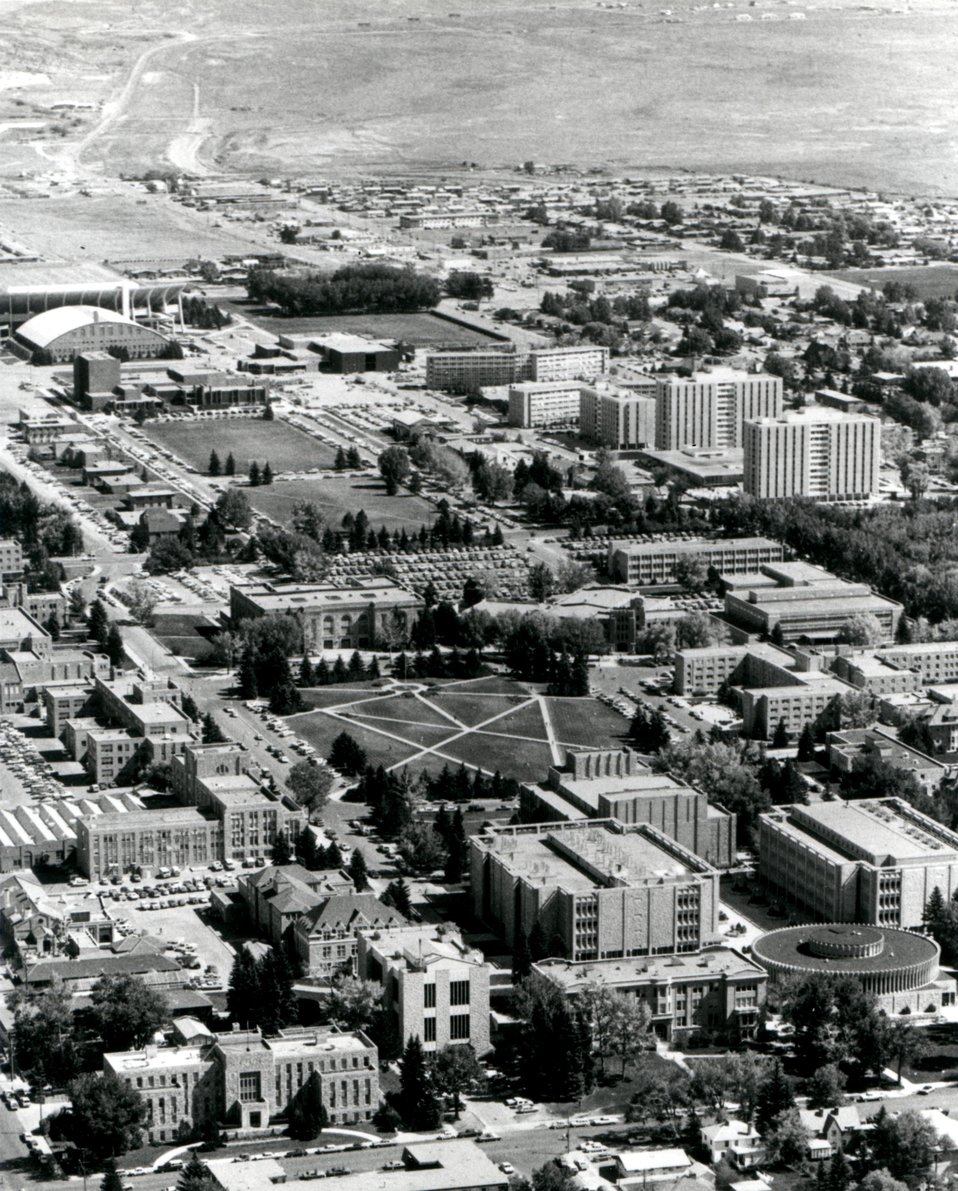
The Energy Research and Development Administration's Laramie Energy Research Center is headquarter (lower left of photograph) at the University of Wyoming campus at Laramie- the hub of the vast Rocky Mountain fossil energy resources. Circa 1975.